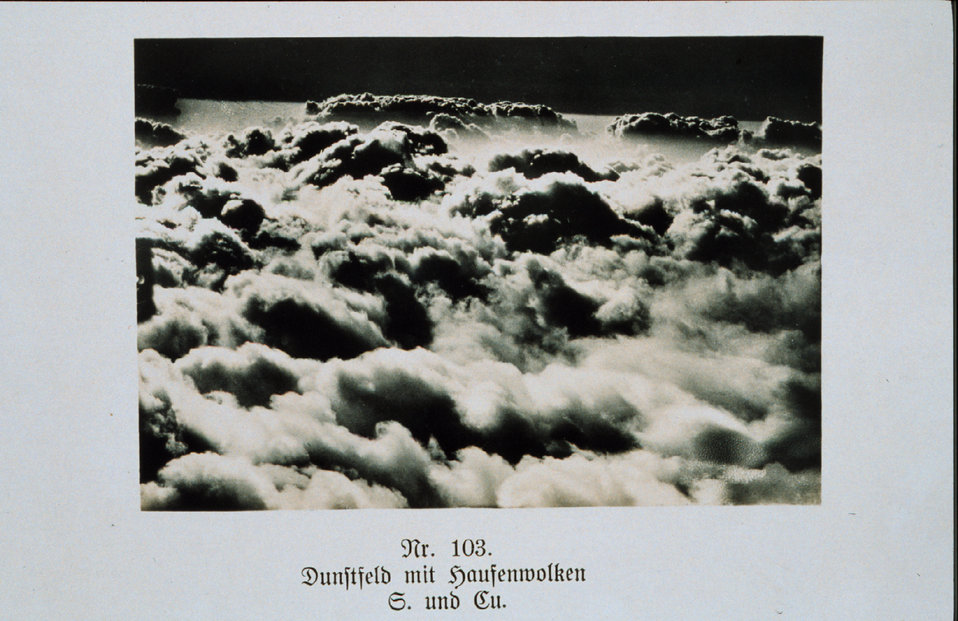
Flying above a sea of clouds - altostratus from an aircraft Plate Nr. 103 of 'Wolken im Luftmeer', a German cloud atlas Produced by flyers of the German Air Force. Library Call No. QC923 .W65 1917 .